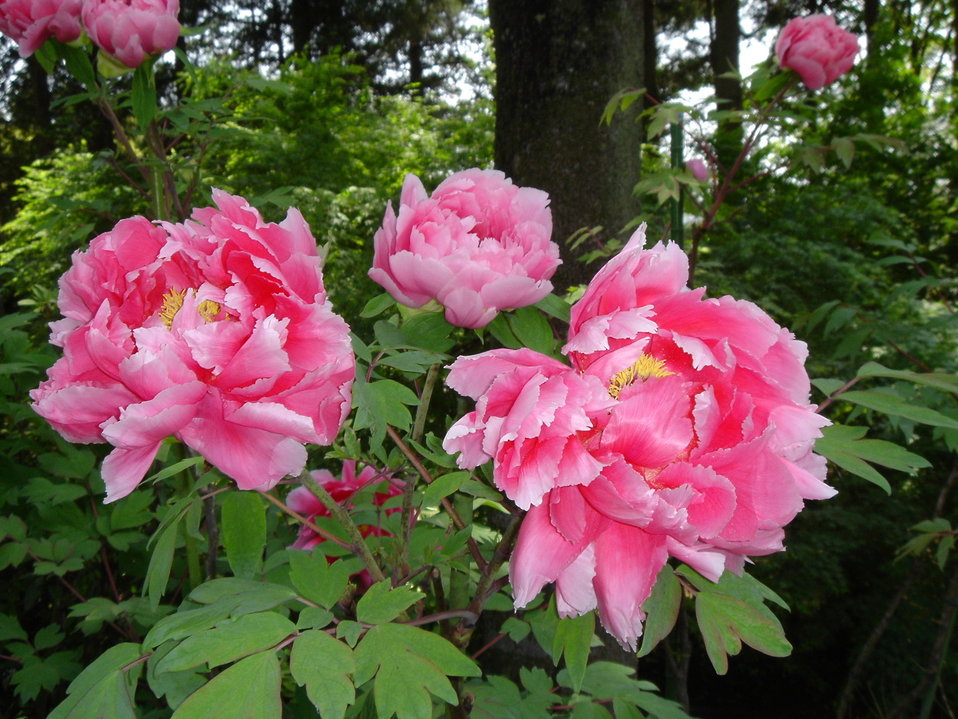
Paeonia suffruticosa7